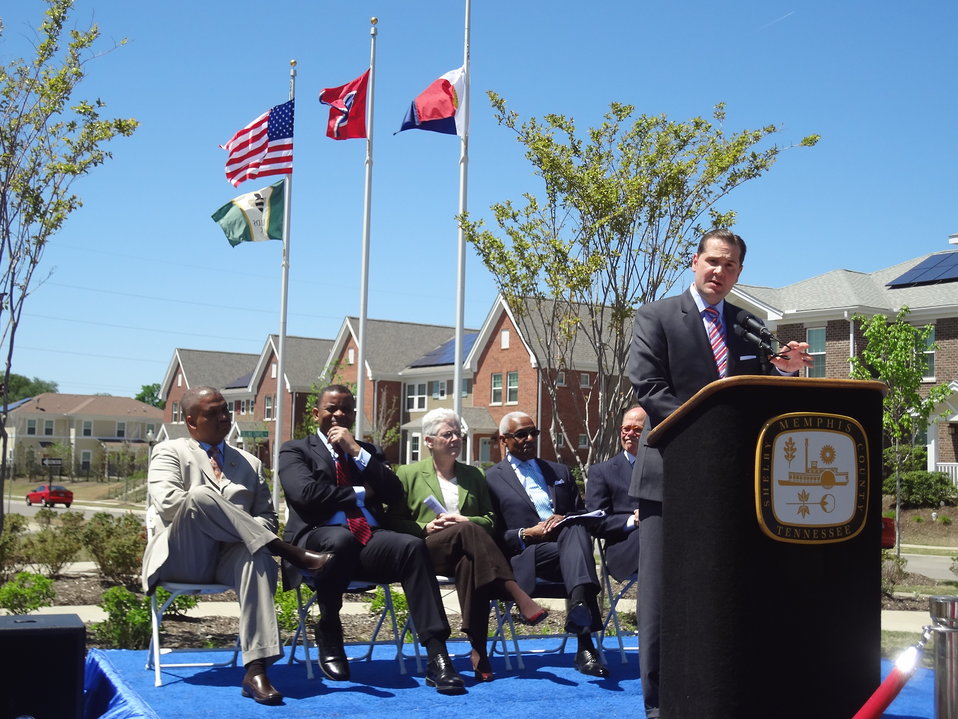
Press Conference at Legends Park

Administrator McCarthy, DOT Secretary Foxx, HUD Regional Administrator Jennings, Memphis Mayor Wharton, and Tennessee Congressman Cohen visited Legends Parks, an affordable housing development with 404 units. The development was built on the site of Dixie Homes, a dilapidated housing project, with support from a HUD Hope VI grant. The homes feature ENERGY STAR windows, doors, appliances, and lighting; low-VOC paint; water-conserving toilets, showers, and faucets; and solar panels.